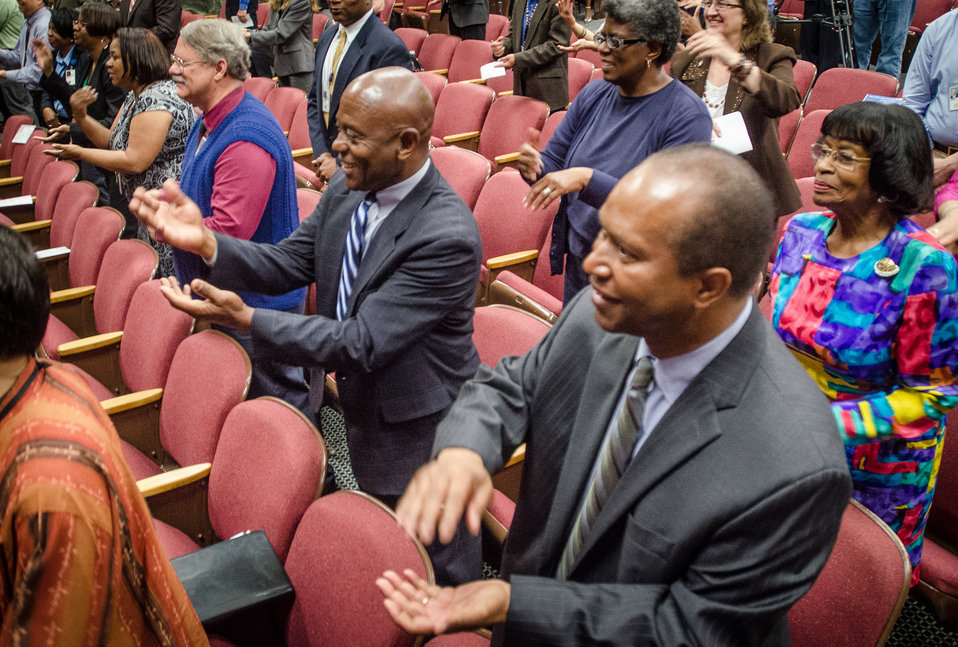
U.S. Department of Agriculture’s (USDA) audience members stand and learn to hula dance from USDA employee Saleia Afele Faamuli (not seen on stage), during the USDA Asian Pacific American Heritage Month Observance, at the USDA headquarters in Washington, D.C., on Thursday, May 23, 2013. The Hawaiian hula dance is one of the many valued cultural activities from the Pacific Islands, and represents part of This year’s theme: “Building leadership; Embracing the Cultural Values and Inclusions.”